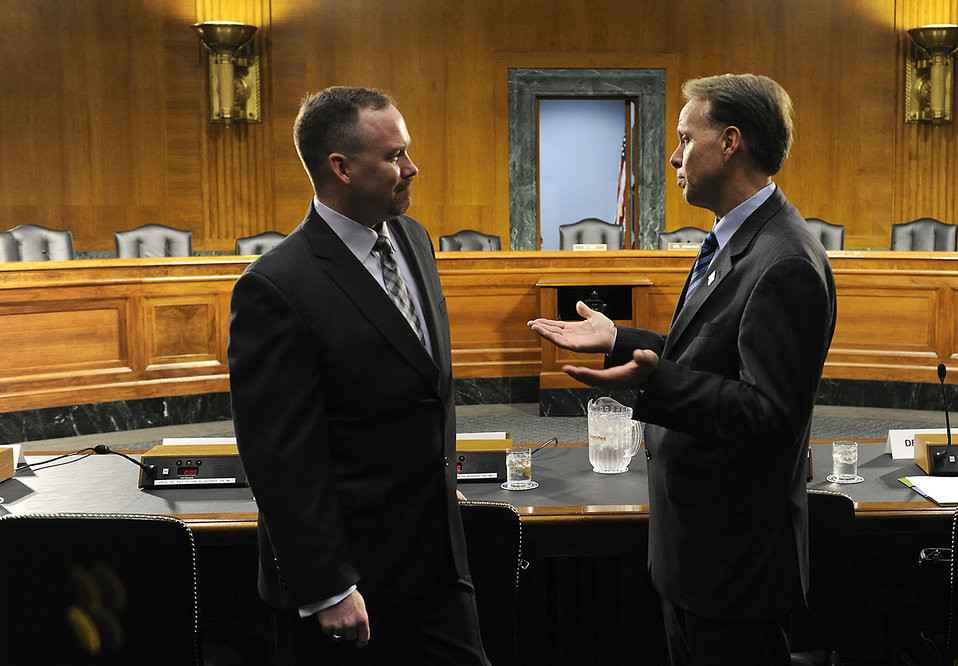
Air Force spouse testifies on military families with special needs

Jeremy Hilton and Charles Milam talk prior to a hearing in front of the U.S. Senate Armed Services Subcommittee on Personnel in Washington, D.C., June 21, 2012. Hilton provided testimony on Department of Defense programs and policies in support of military families with special needs. Hilton is the Military Spouse of the Year for 2012 and Milam is the principal director for military community and family policy